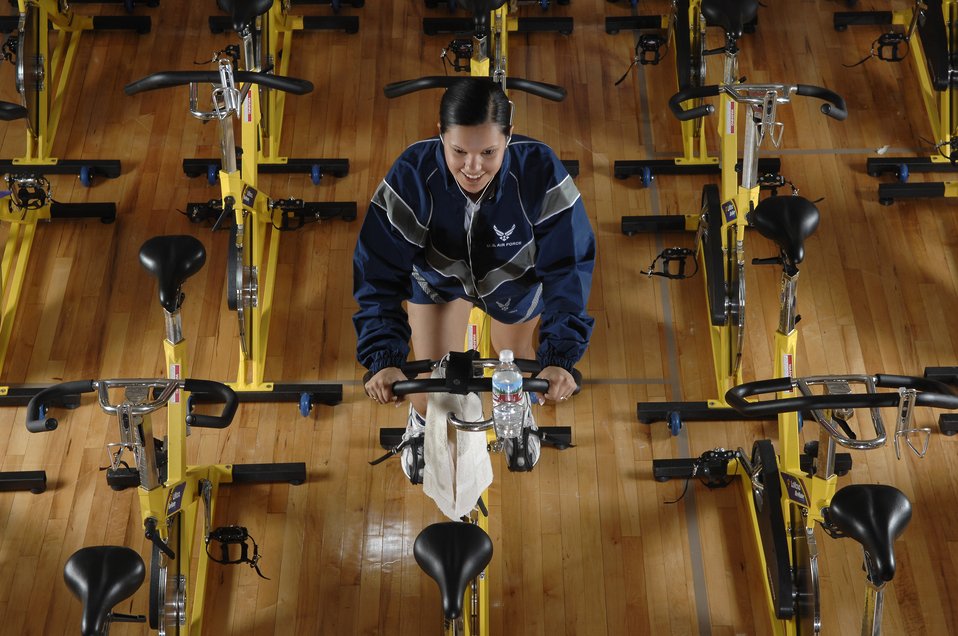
Pedal 'til it burns

Staff Sgt. Irene Noriega assigned to the 62nd Airlift Wing at McChord Air Force Base, Wash., participates in a zero-impact, fat burning, full body cardiovascular workout spin class March 9 at the McChord fitness center annex.